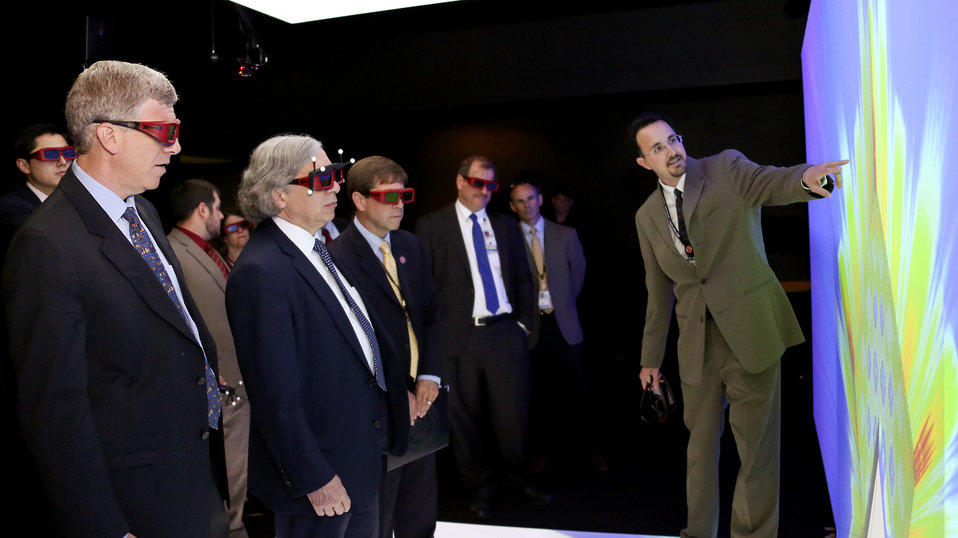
Deputy Secretary of Energy Daniel Poneman, Secretary of Energy Ernest Moniz, and Representative Chuck Fleischman tour the Consortium for Advanced Simulation of Light Water Reactors (CASL) Facility at ORNL on June 3, 2013.

During a tour of Oak Ridge National Laboratory on June 3, 2013, researcher Andrew Godfrey explains a reactor simulation in a CASL visualization lab.